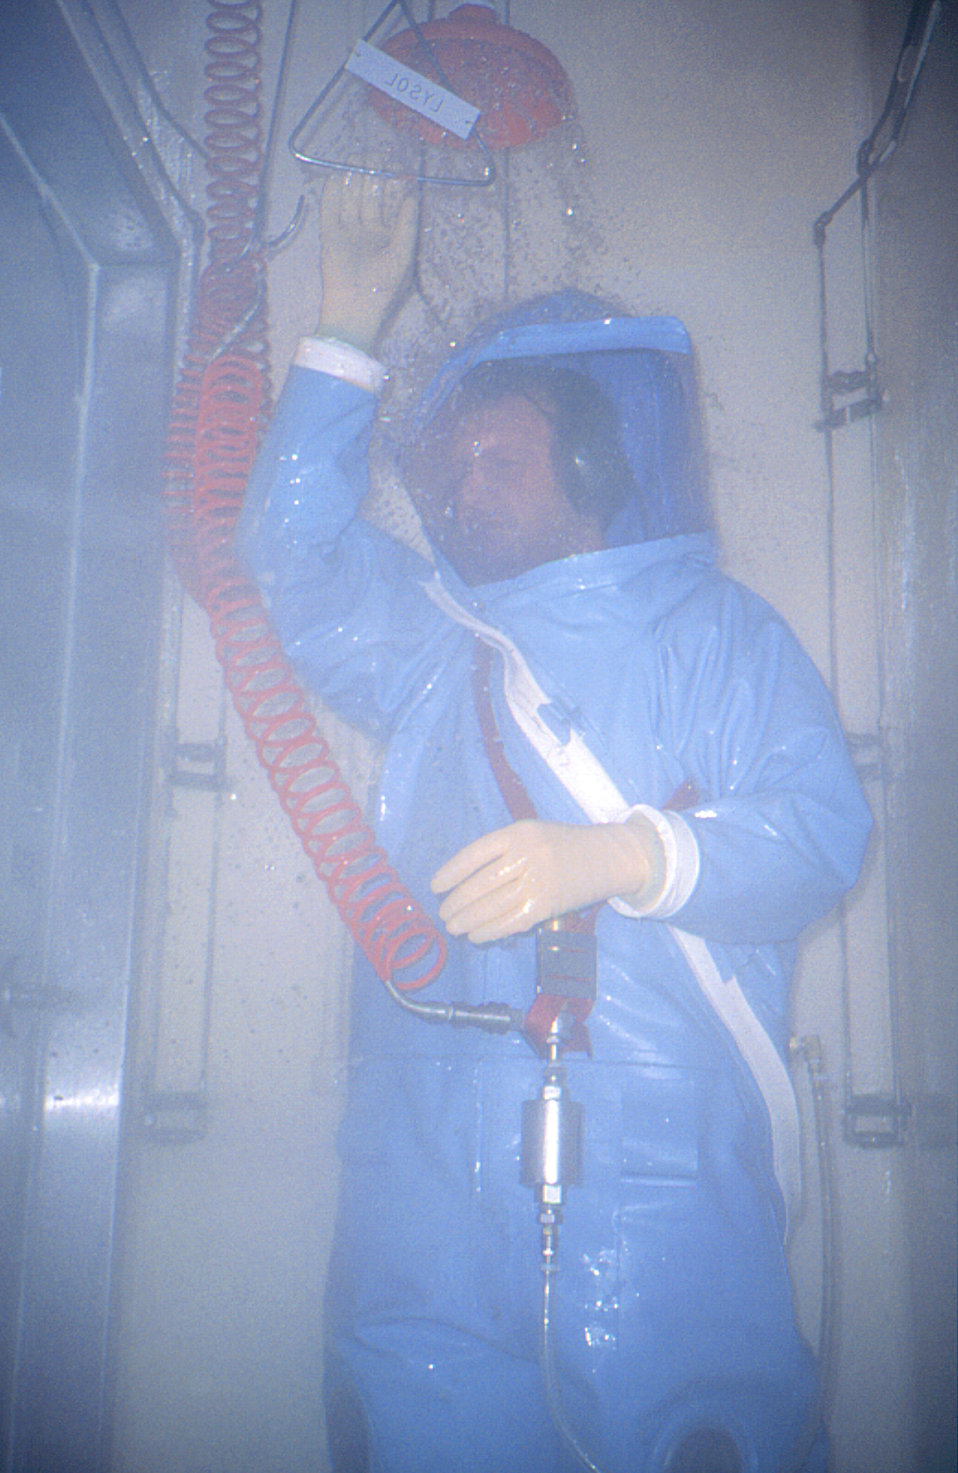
A CDC scientist showers in a protective suite before leaving a Biosafety Level 4 laboratory.